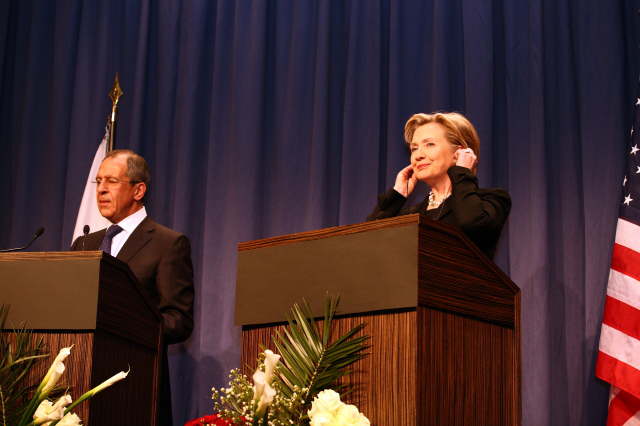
Press Conference With Russian Foreign Minister

Press conference after dinner meeting between U.S. Secretary of State Hillary Rodham Clinton and Russian Foreign Minister Sergey Lavrov in Geneva, Switzerland March 6, 2009.